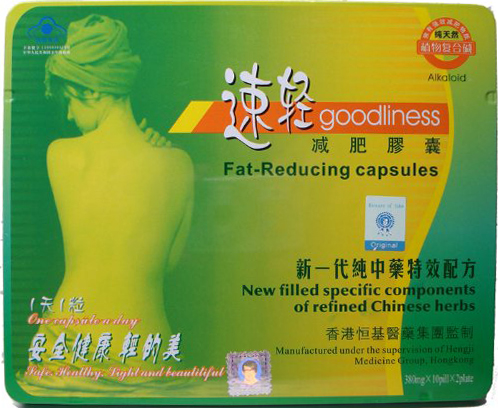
Goodliness Fat-Reducing Capsules

November 6, 2013 - The FDA is advising consumers not to purchase or use 'Goodliness Fat-Reducing Capsules,' a product promoted and sold for weight loss. The product was found to contain undeclared sibutramine and phenolphtalein. For more information, go to www.fda.gov/Drugs/ResourcesForYou/Consumers/BuyingUsingMe...

And read this Consumer Update: Beware of Fraudulent ‘Dietary Supplements’